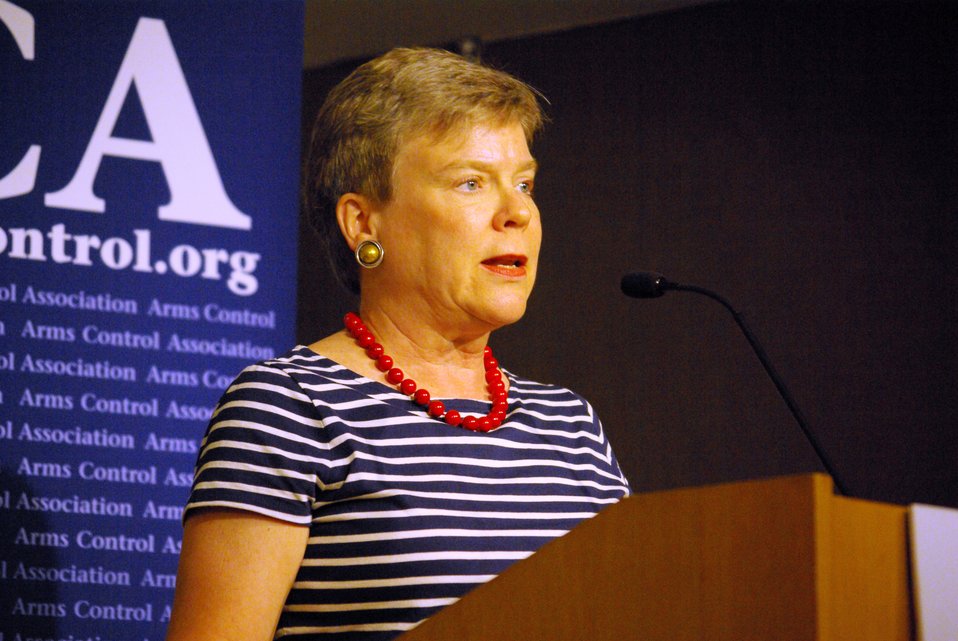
Under Secretary Gottemoeller Delivers Remarks on U.S. Arms Control Priorities

Acting Under Secretary for Arms Control and International Security delivers remarks on the Administration’s arms control priorities at the Arms Control Association’s annual meeting in Washington, D.C., on June 4, 2012.